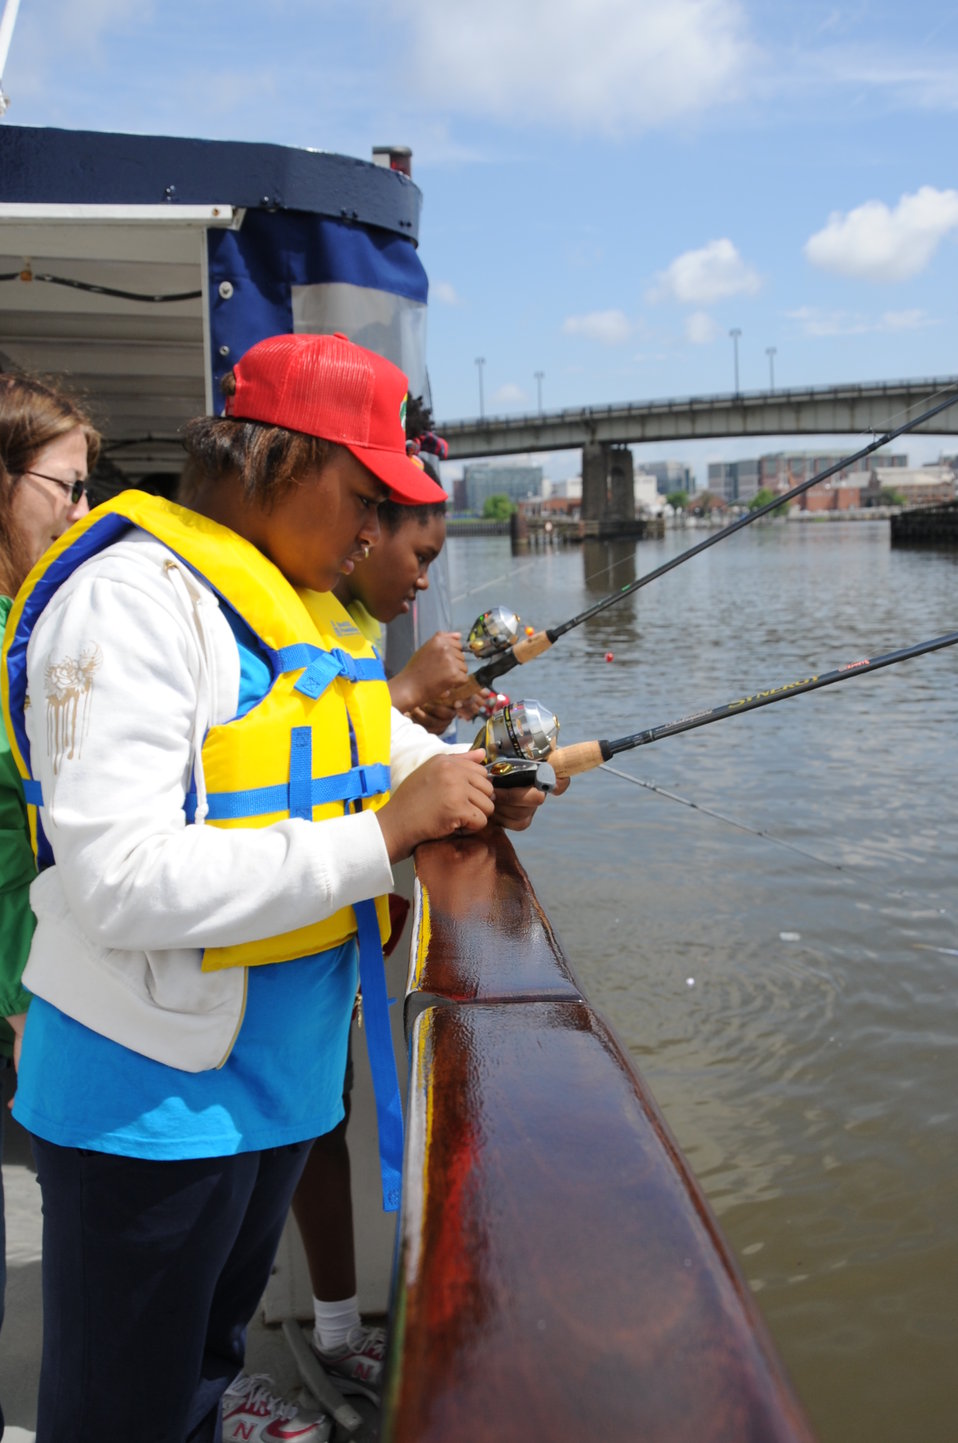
2013 National Fishing and Boating Week

Local students prepare to enjoy fishing at the annual kick-off of National Fishing and Boating Week on the Anacostia River in Washington D.C.